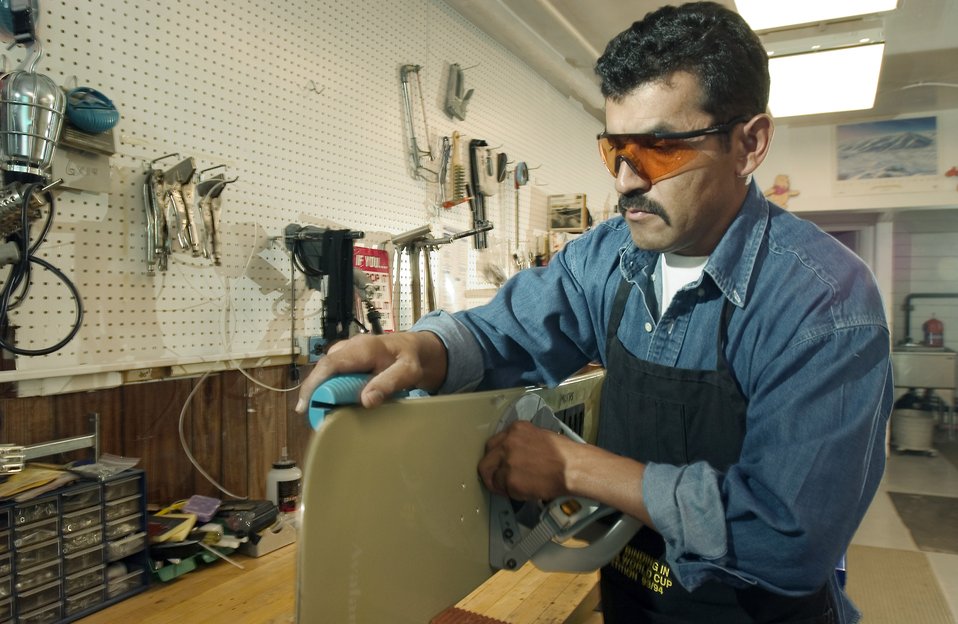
Mountain Home 'maintainer' readies skis for season

MOUNTAIN HOME AIR FORCE BASE, Idaho -- Raul Hernandez, the base's only certified ski-equipment maintainer, uses a special file to create a sharp, 90-degree edge on a snowboard. The process is part of an annual tune up of the outdoor recreation supply office's more than 600 pairs of skis, 100 snowboards and countless cross-country skis, snowshoes and sleds.